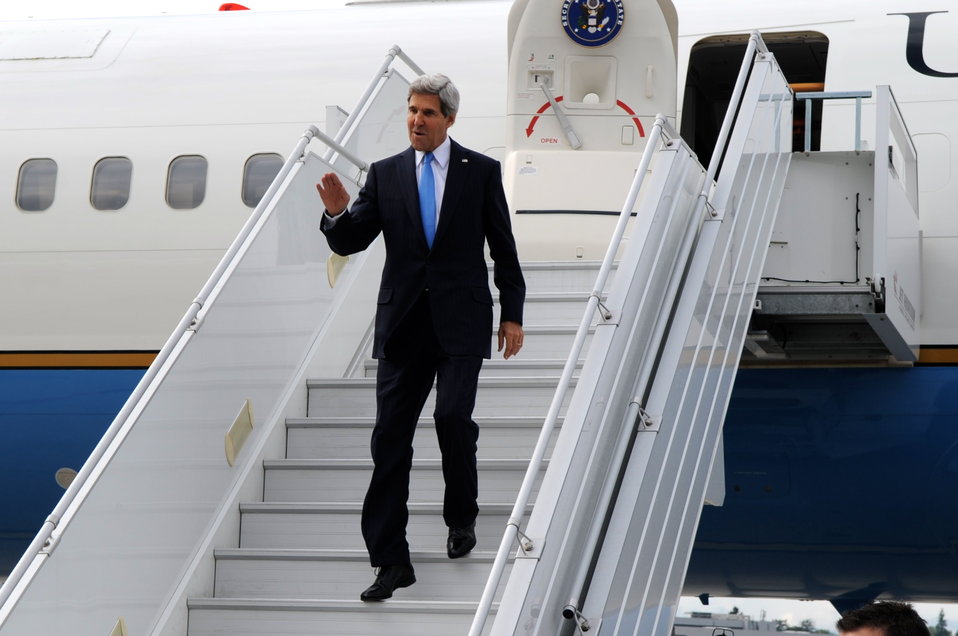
Secretary Kerry arrives in Geneva for Talks on Syria

U.S. Secretary of State John Kerry arrives in Geneva, Switzerland, for talks with Russian Foreign Minister Sergey Lavrov regarding the disposition of Syrian chemical weapons stocks on Sept. 12, 2013.